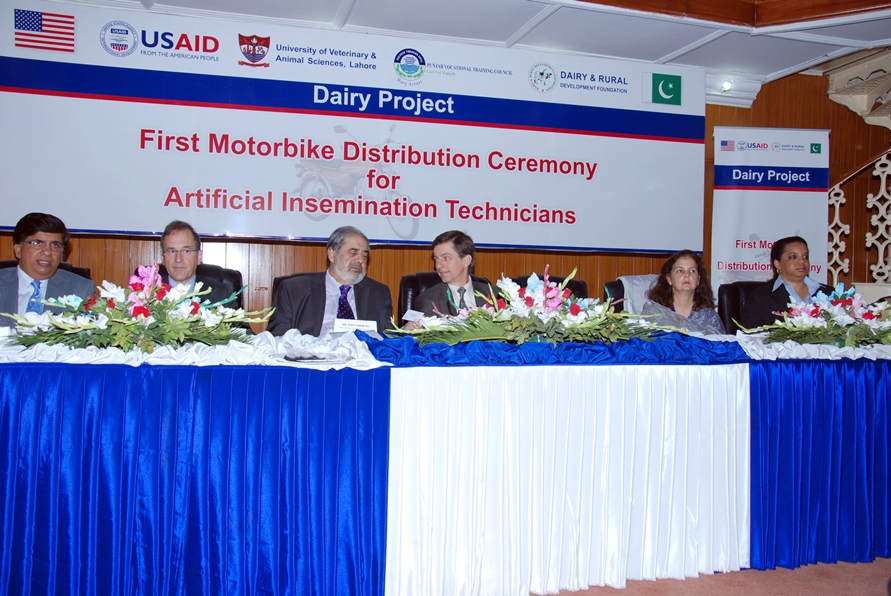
Distinguished guests at the motrocycle distribution ceremony